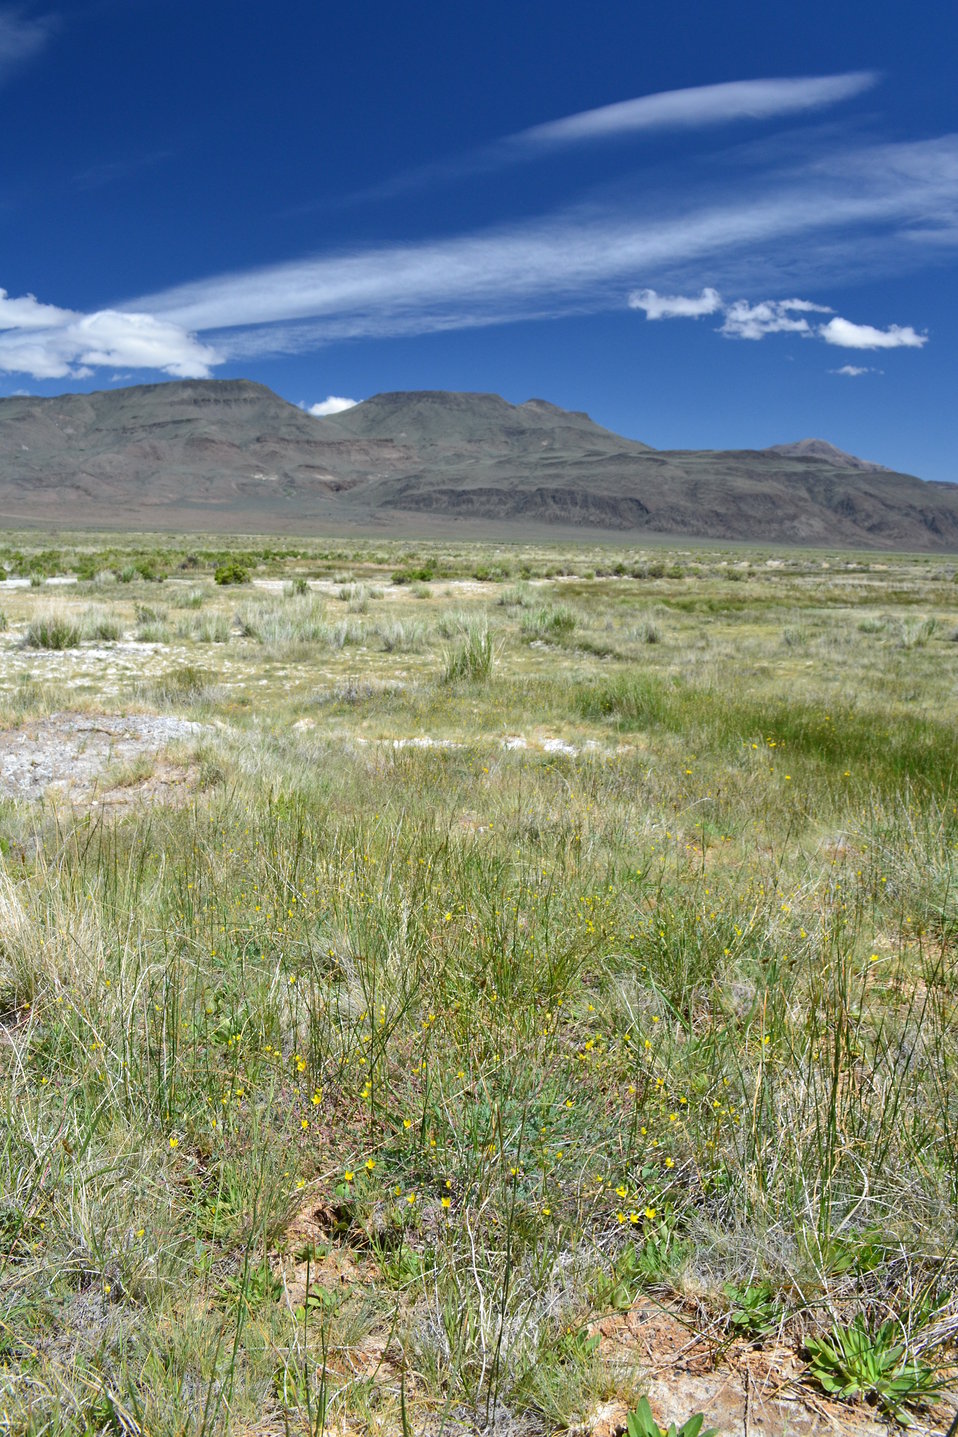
Soldier Meadow cinquefoil

All known locations of Soldier Meadow
cinquefoil are restricted to approximately 23 acres in the Soldier Meadow region of Humboldt County in northwestern Nevada, and the Ash Valley region of Lassen County in northeastern California.